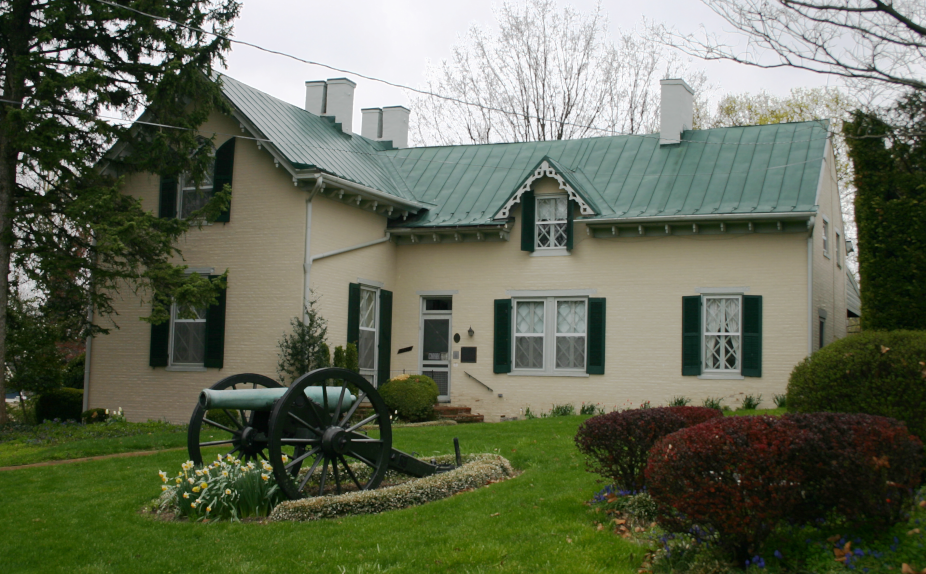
author:anonymous source:Canon REBEL digital camera